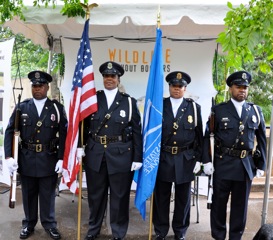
US Postal Honor Guard Cyndi Perry